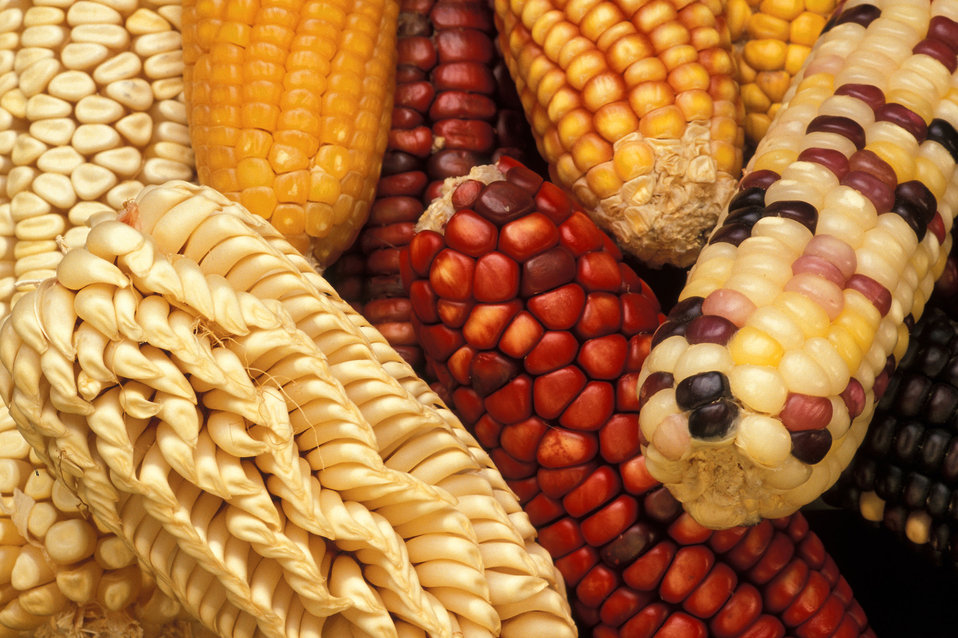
To increase the genetic diversity of U.S. corn, the Germplasm Enhancement for Maize (GEM) project seeks to combine exotic germplasm, such as this unusually colored and shaped maize from Latin America, with domestic corn lines.